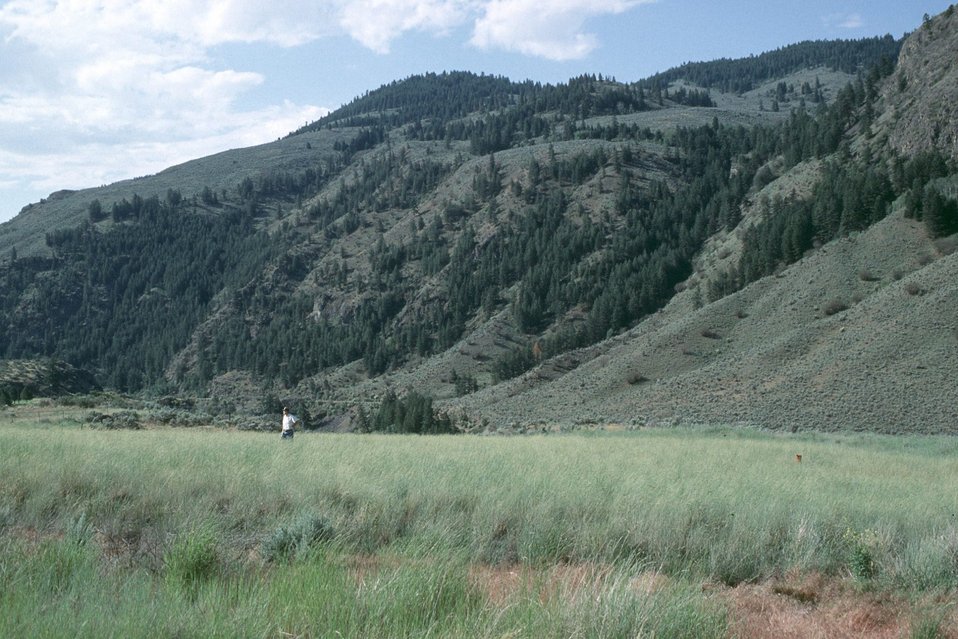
Landfill Rehab, Orville, Washington.